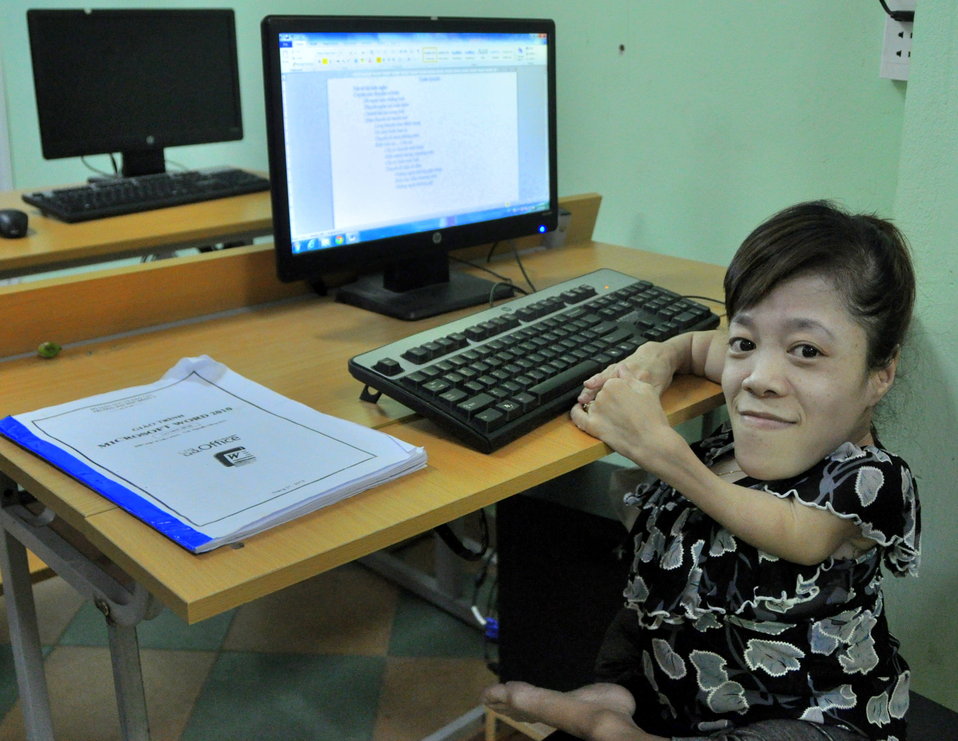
USAID Visits IT Training Program for People with Disabilities at Dong A University

Danang, Vietnam
July 17, 2013